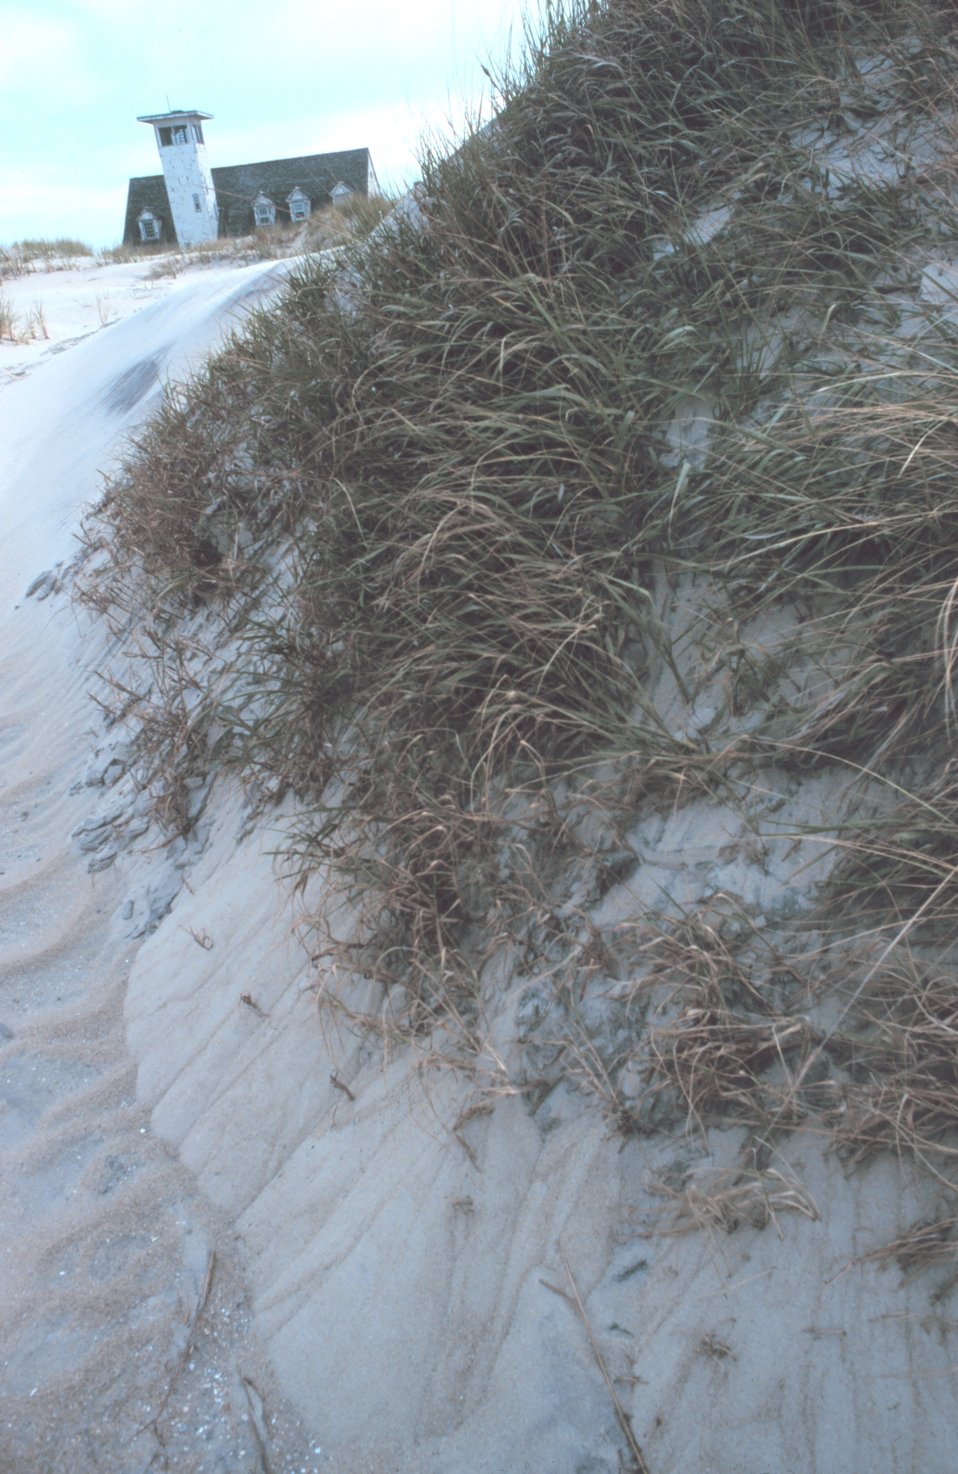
Wind-swept dunes near the abandoned Coast Guard Station